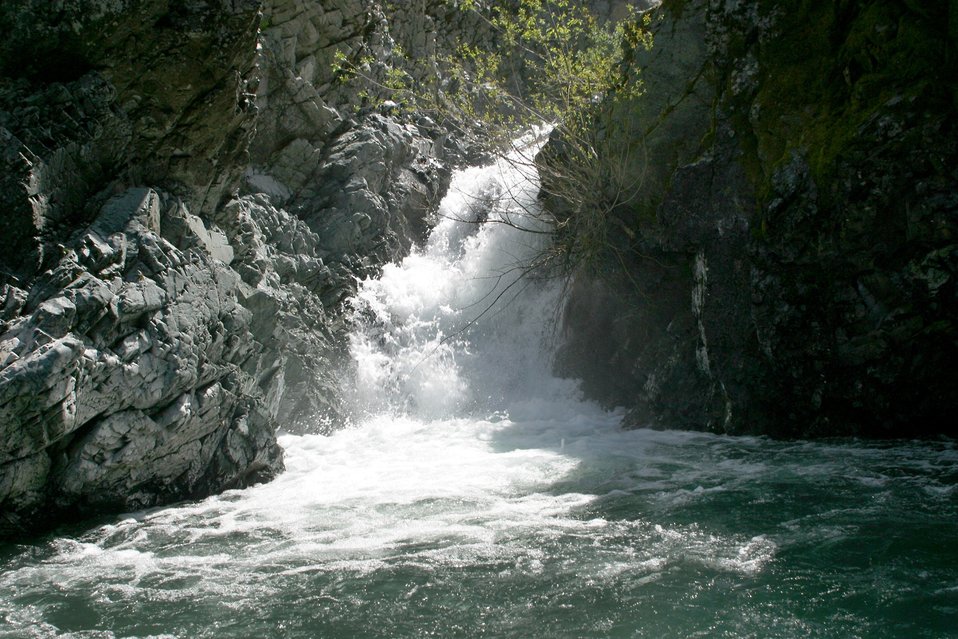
Wild section of the Rogue River from Grave Creek to Foster Bar May 19 to May 22.